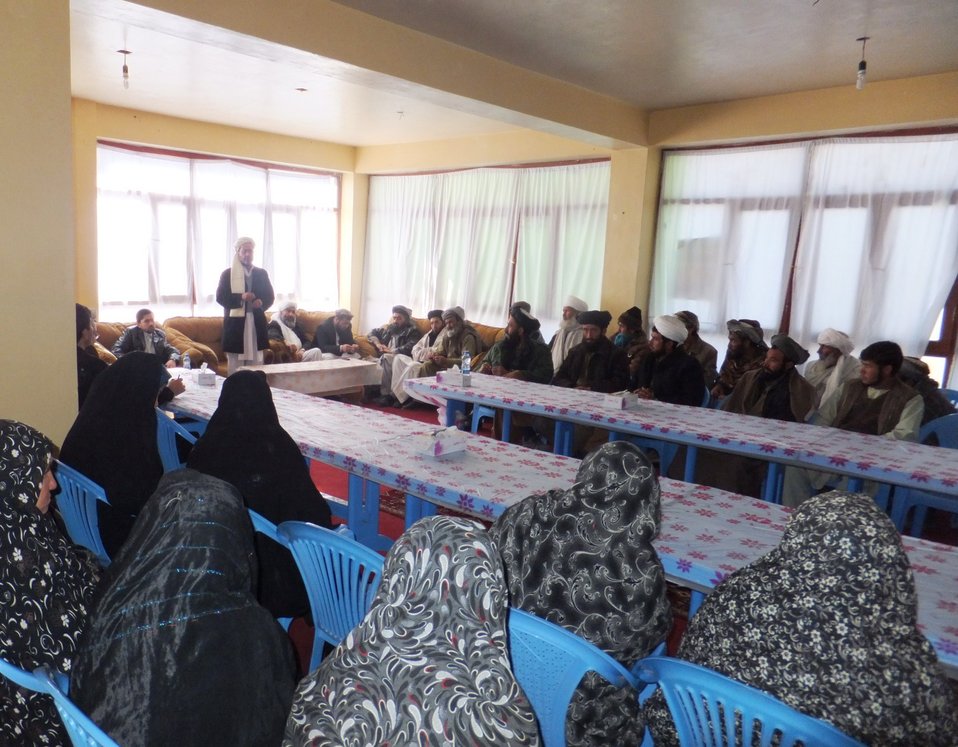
The 8th Chaghcharan DSC meeting was held with partiicpation of 69 people on November 27